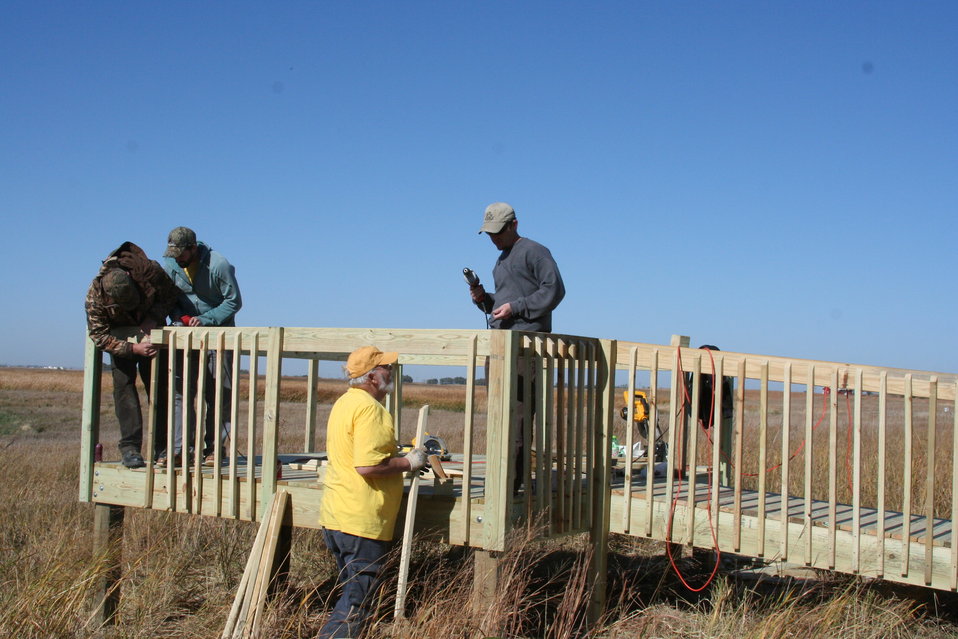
New Observation Deck

Local Friends Group Members and USFWS staff building new observation deck for our Maga Ta-Hohpi WPA.